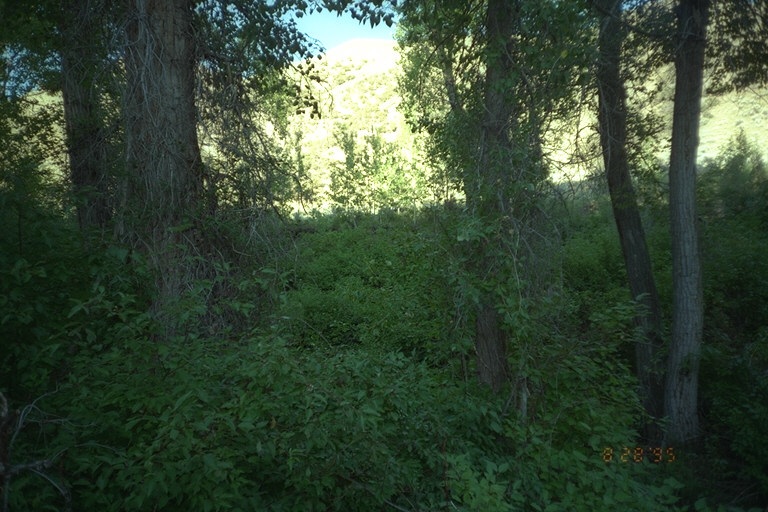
Riparian area Public Lands Salmon Field Office UCSC Upper Columbia Salmon Clearwater District